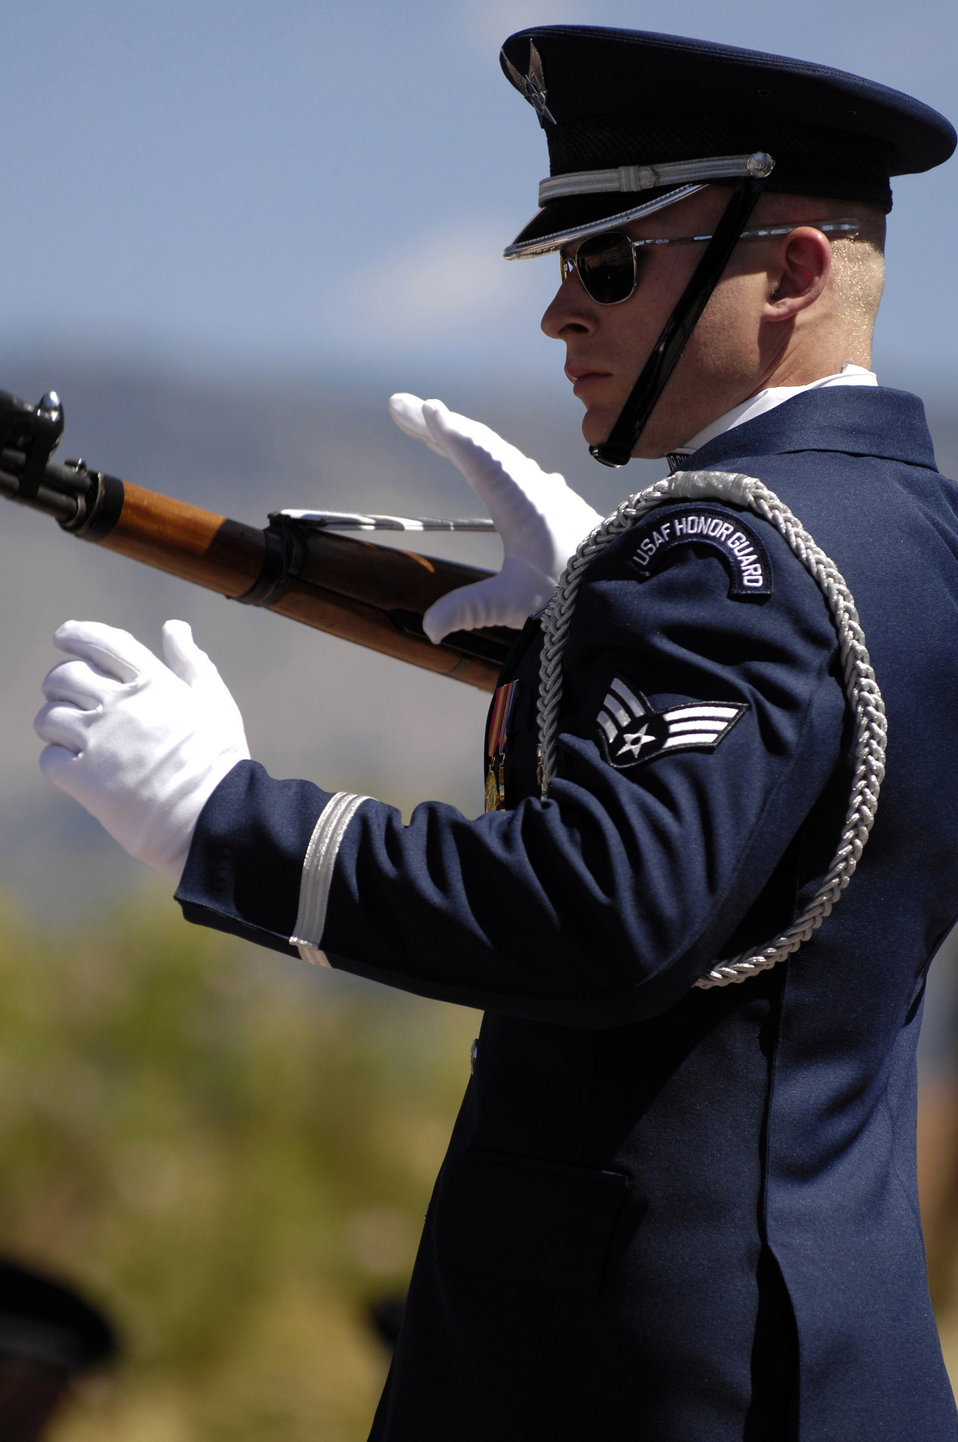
Drill team celebrates Air Force anniversary

Senior Airman Michael Rowe of the Air Force Honor Guard Drill Team performs Sept. 14 at the Sandia Resort's outdoor amphitheatre in Albuquerque, N.M., before the New Mexico State Air Force 60th Anniversary Ball .